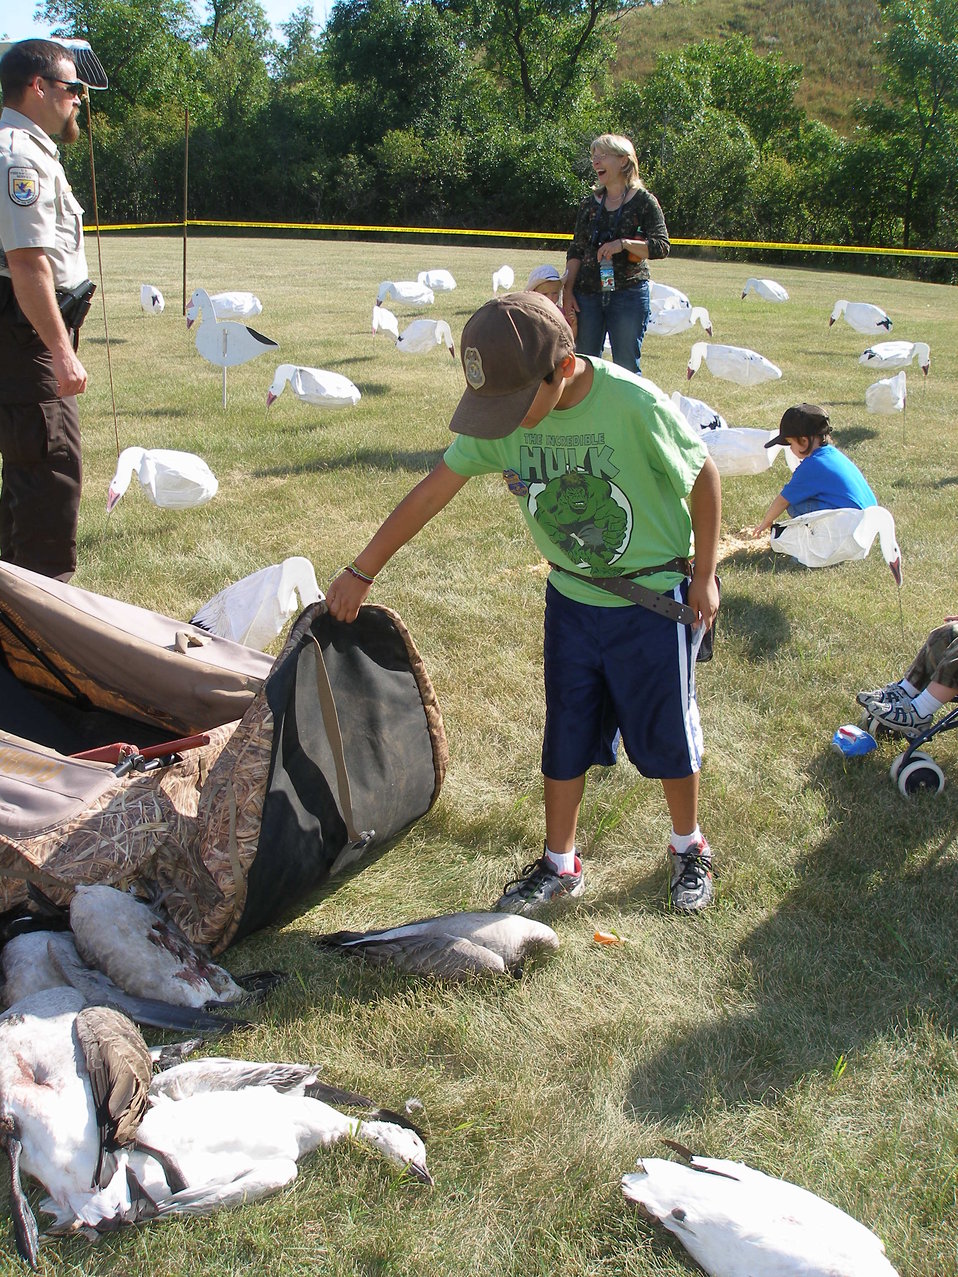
2011 Greenwing Day - Game Warden scenario session

Des Lacs National Wildlife Refuge, Tasker's Coulee

Looks like this warden found a hunter trying to hide their overharvested game.